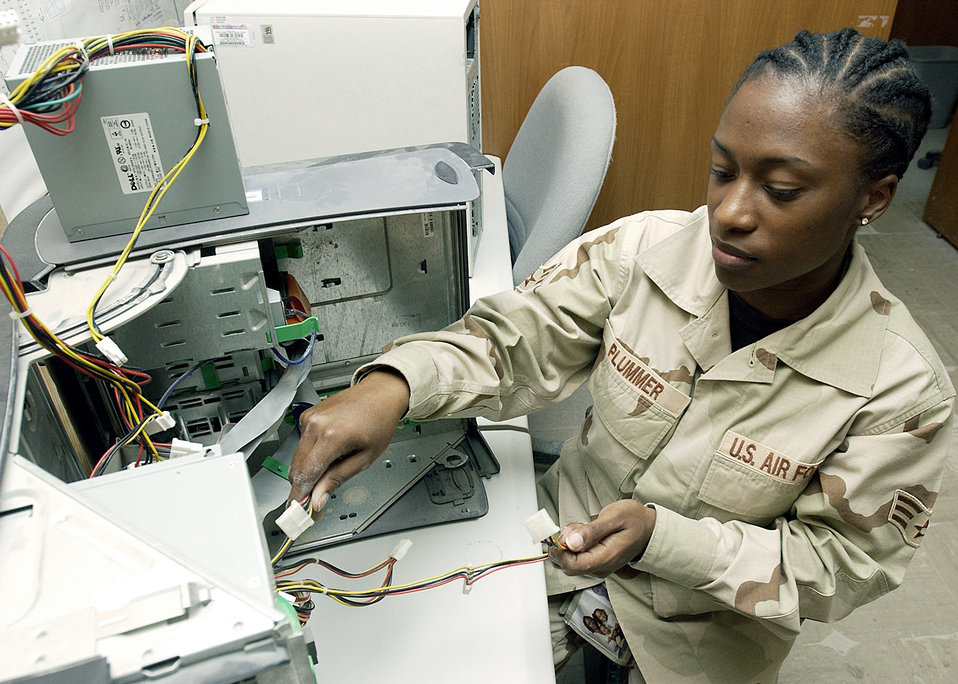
Providing power

SOUTHWEST ASIA -- Senior Airman Crystal Plummer installs a power supply to a computer at a forward-deployed location. Airman Plummer is the computer workgroup manager for the 379th Expeditionary Civil Engineer Squadron. She is deployed from Eglin Air Force Base, Fla.